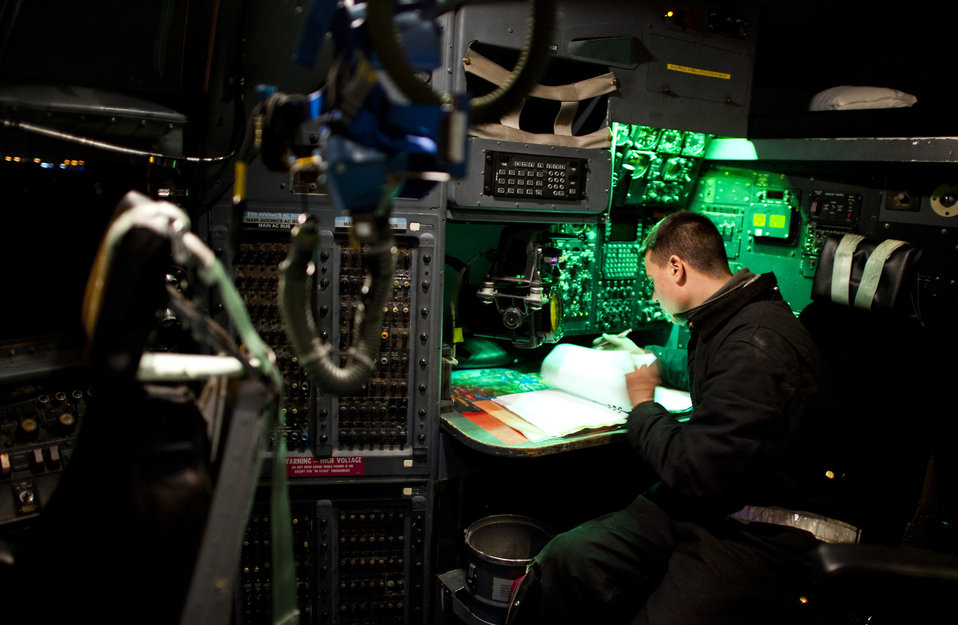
Maintainers keep C-130s flying to supply Operation Tomodachi

Airman 1st Class Stephen Tessier reviews log books while powering up a C-130 Hercules March 14, 2011, at Yokota Air Base, Japan. C-130s play a crucial role in disaster-relief operations because of their ability to land on dirt runways and other less-than-ideal landing conditions. Airman Tessier is a crew chief assigned to the 374th Aircraft Maintenance Squadron.